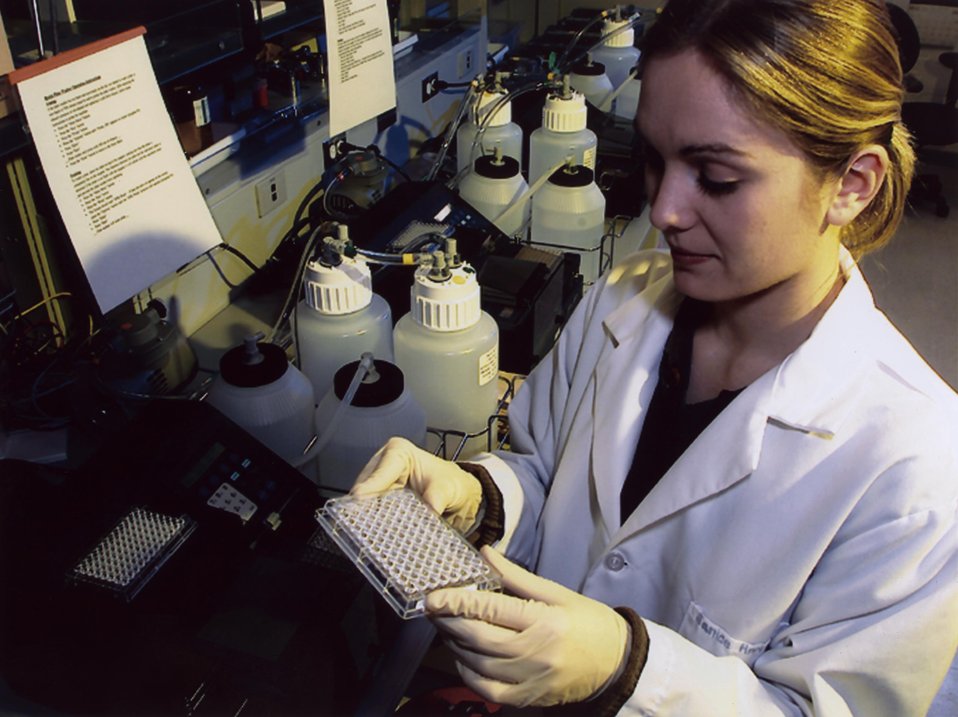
JGI RESEARCHER REMOVES A PLATE OF PURIFIED DNA FROM A PLATE WASHER, DURING AN EARLY STEP OF SEQUENCING PROCESS.
HE JGI, LOCATED NORTH OF LLNL, IS A COLLABORATION OF LLNL, LBNL AND LANL. AT THE PRODUCTION SEQUENCING FACILITY OF THE JGI, EMPLOYEES OF THE THREE INSTITUTIONS ARE WORKING TOGETHER TO SEQUENCE HUMAN CHROMOSOMES 5, 16, AND 19 FOR THE WORLDWIDE HUMAN GENOME PROJECT. SEQUENCING IS THE PROCESS HUNTING GENES. EACH OF OUR 100,000 GENES IS COMPOSED OF THE FOUR BASES, CALLED BASE PAIRS. SCIENTISTS ULTIMATELY WANT TO DECODE THE ENTIRE SEQUENCE OF DNA BASES, IN ORDER TO IMPROVE MEDICINE, HEALTH CARE AND OTHER AREAS OF BIOLOGICAL SCIENCE.